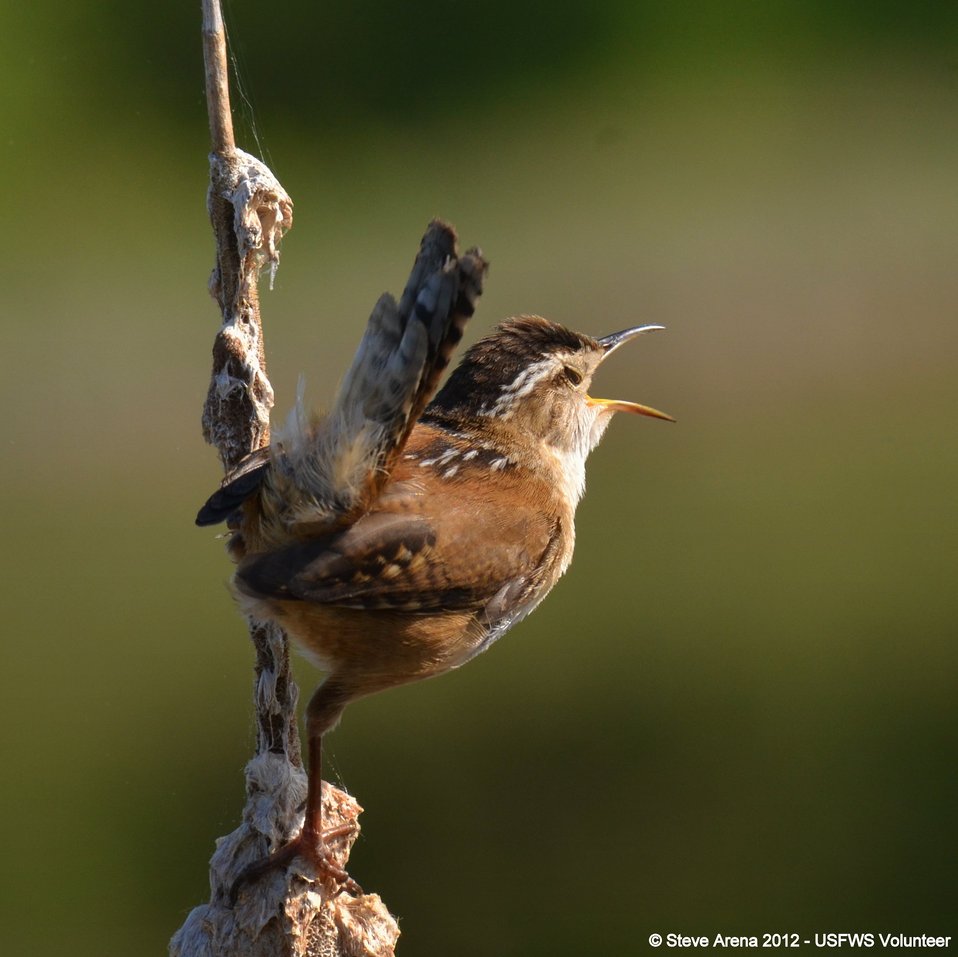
Marsh Wren (Cistothorus palustris) Great Meadows NWR, Concord, MA

Marsh Wren Great Meadows NWR, Concord, MA

Credit: Steve Arena/USFWS

18 May 2012